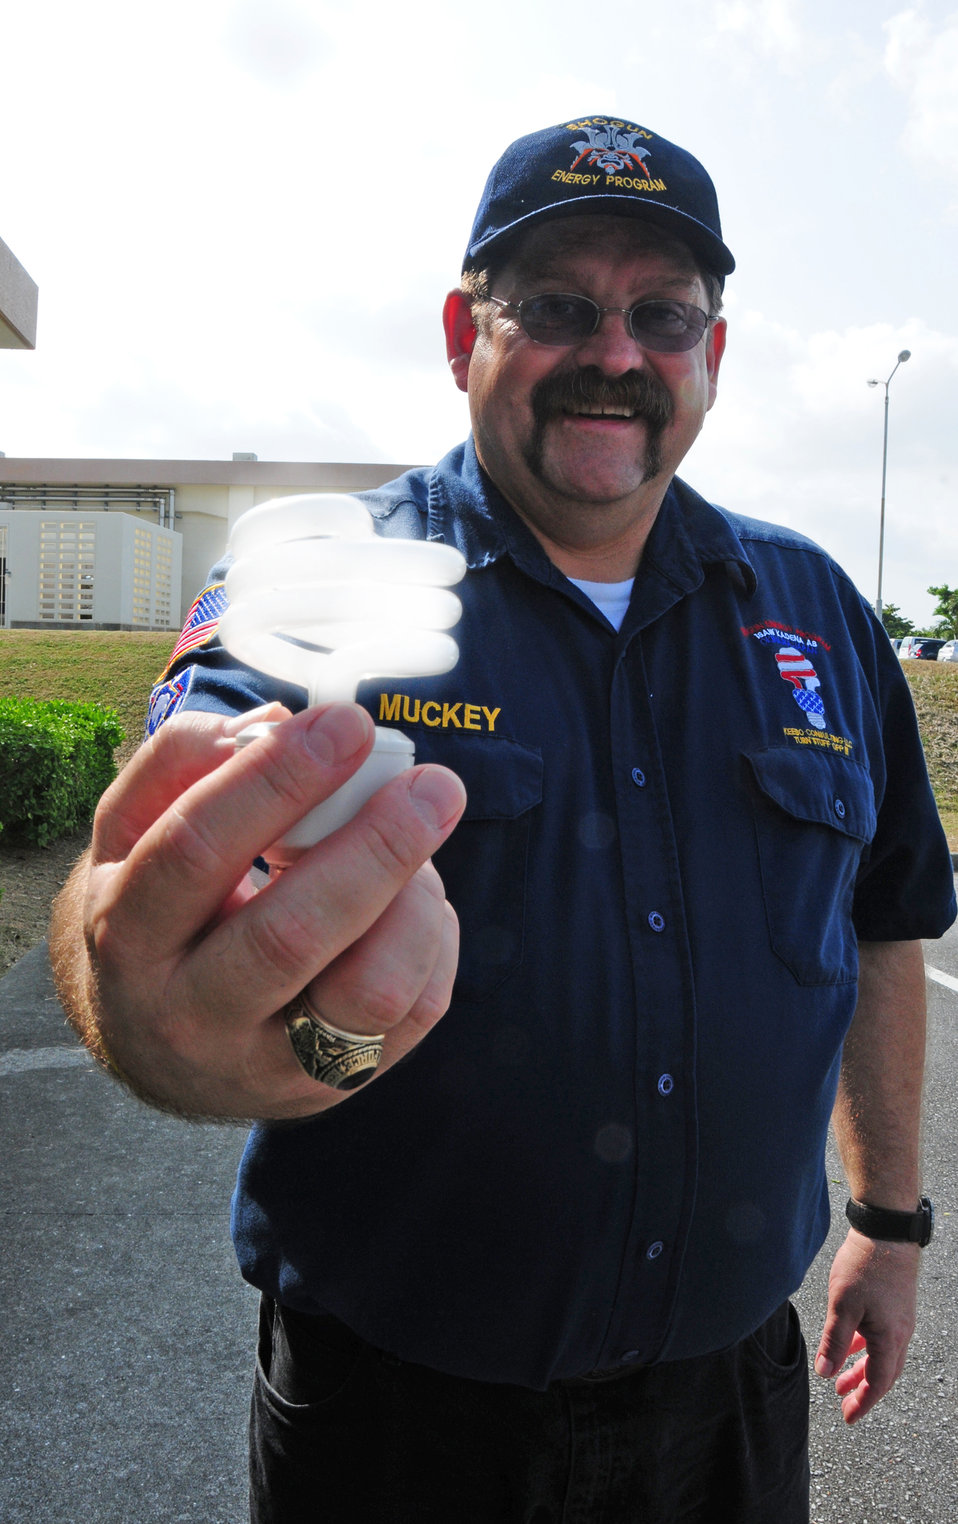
Energy Guy

John Muckey, a resource efficiency manager for the 718th Civil Engineer Squadron at Kadena Air Base, Japan, reveals one of the resources, an energy-saving light bulb, that helped the base earn the 2009 Federal Energy and Water Management Award. Mr. Muckey is known around the base as